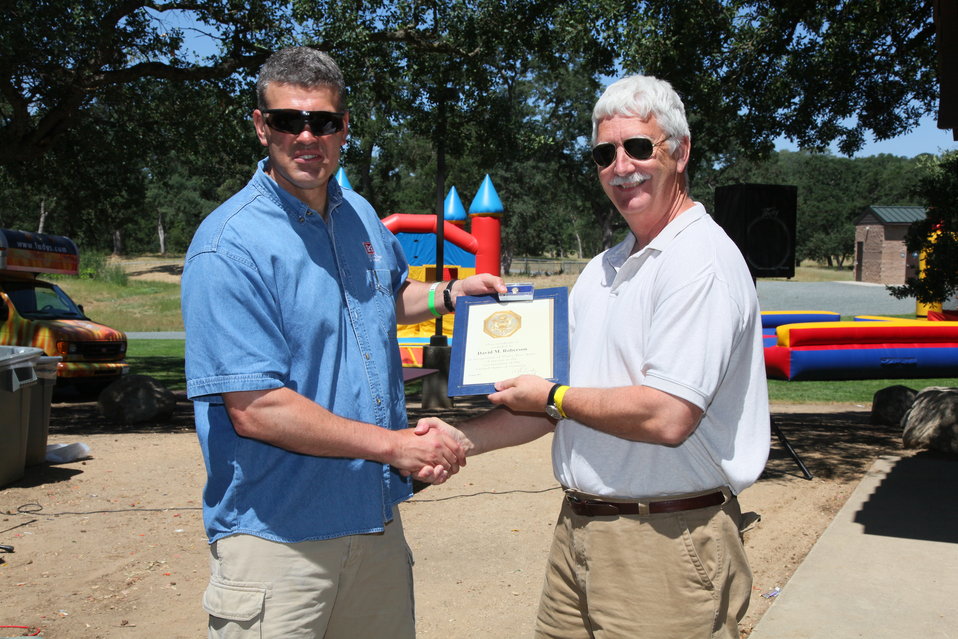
2011 Annual Picnic